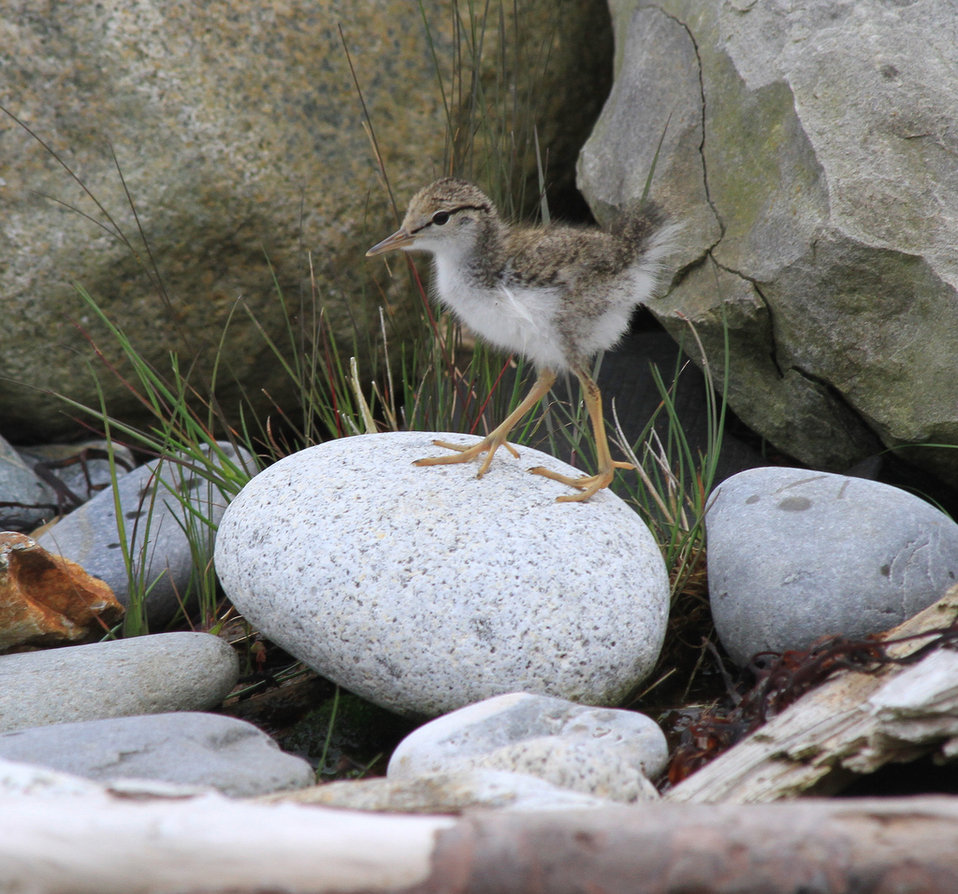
Maine Coastal Islands National Wildlife Refuge, ME

Spotted sandpiper chick photographed on Petit Manan Island, where seabird researchers monitor the breeding success of island birds.